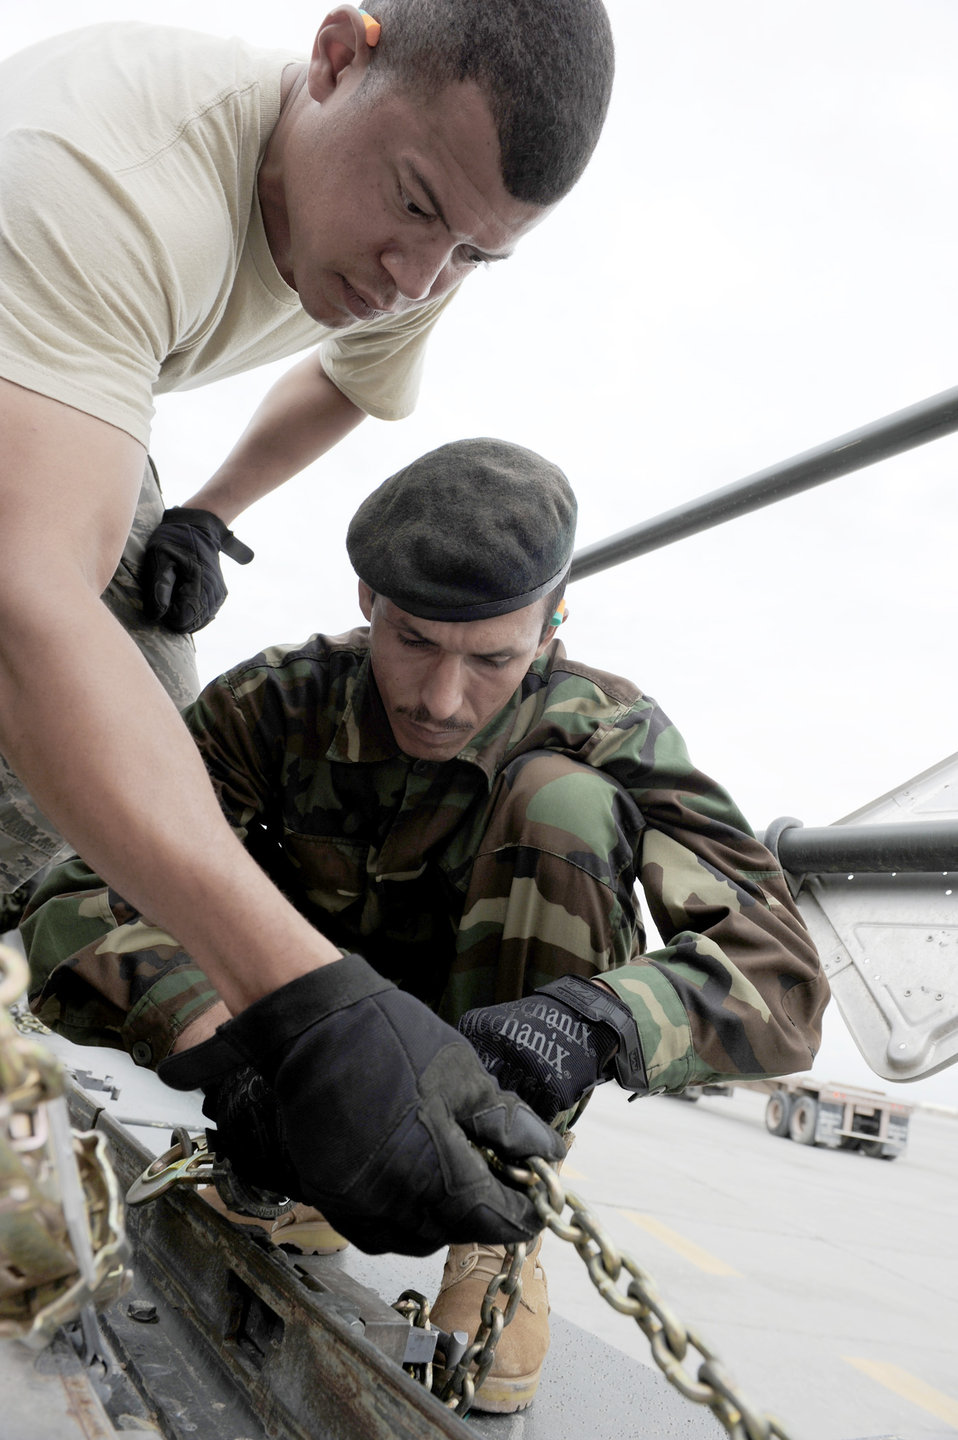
Afghan aerial porters visit Bagram, learn to supply the fight more efficiently

Senior Airman Jason Henry trains an Afghan aerial porter how to properly tie-down cargo on a 60,000-pound capable Tunner cargo loader July 28, 2010, at Bagram Airfield, Afghanistan. Airman Henry is an aerial porter with the 455th Expeditionary Aerial Port Squadron deployed from the 69th APS at Joint Base Andrews, Md.